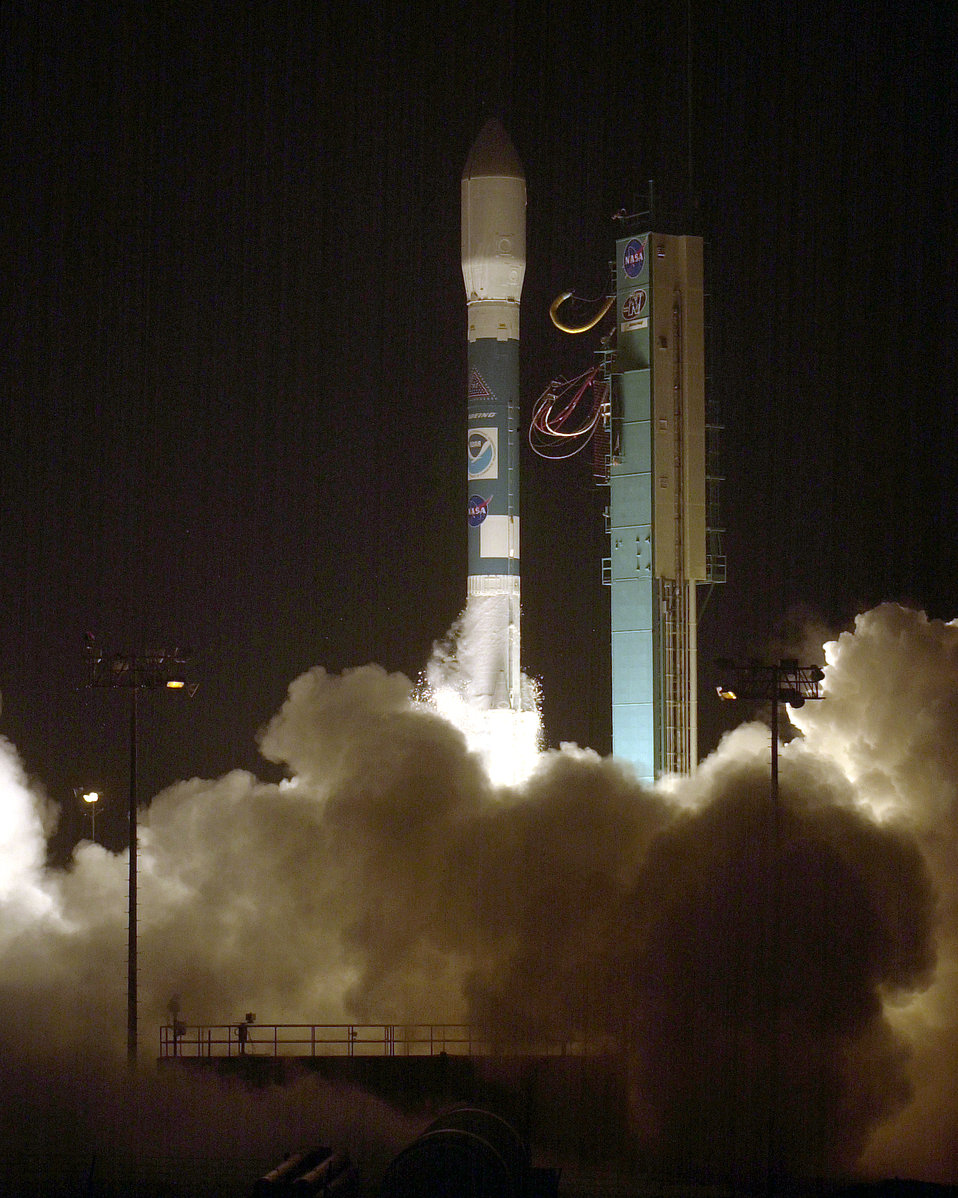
Weather launch

VANDENBERG AIR FORCE BASE, Calif. -- A Delta II rocket carrying a National Oceanic and Atmospheric Administration weather satellite launches from here May 20. The NOAA-N satellite will monitor environmental events and improve weather forecasting worldwide. NOAA-N is the fourth in the current series of five polar-orbiting satellites with improved imaging and sounding capabilities. The spacelift commander for this mission is Col. Frank Wolf, 30th Space Wing vice commander.